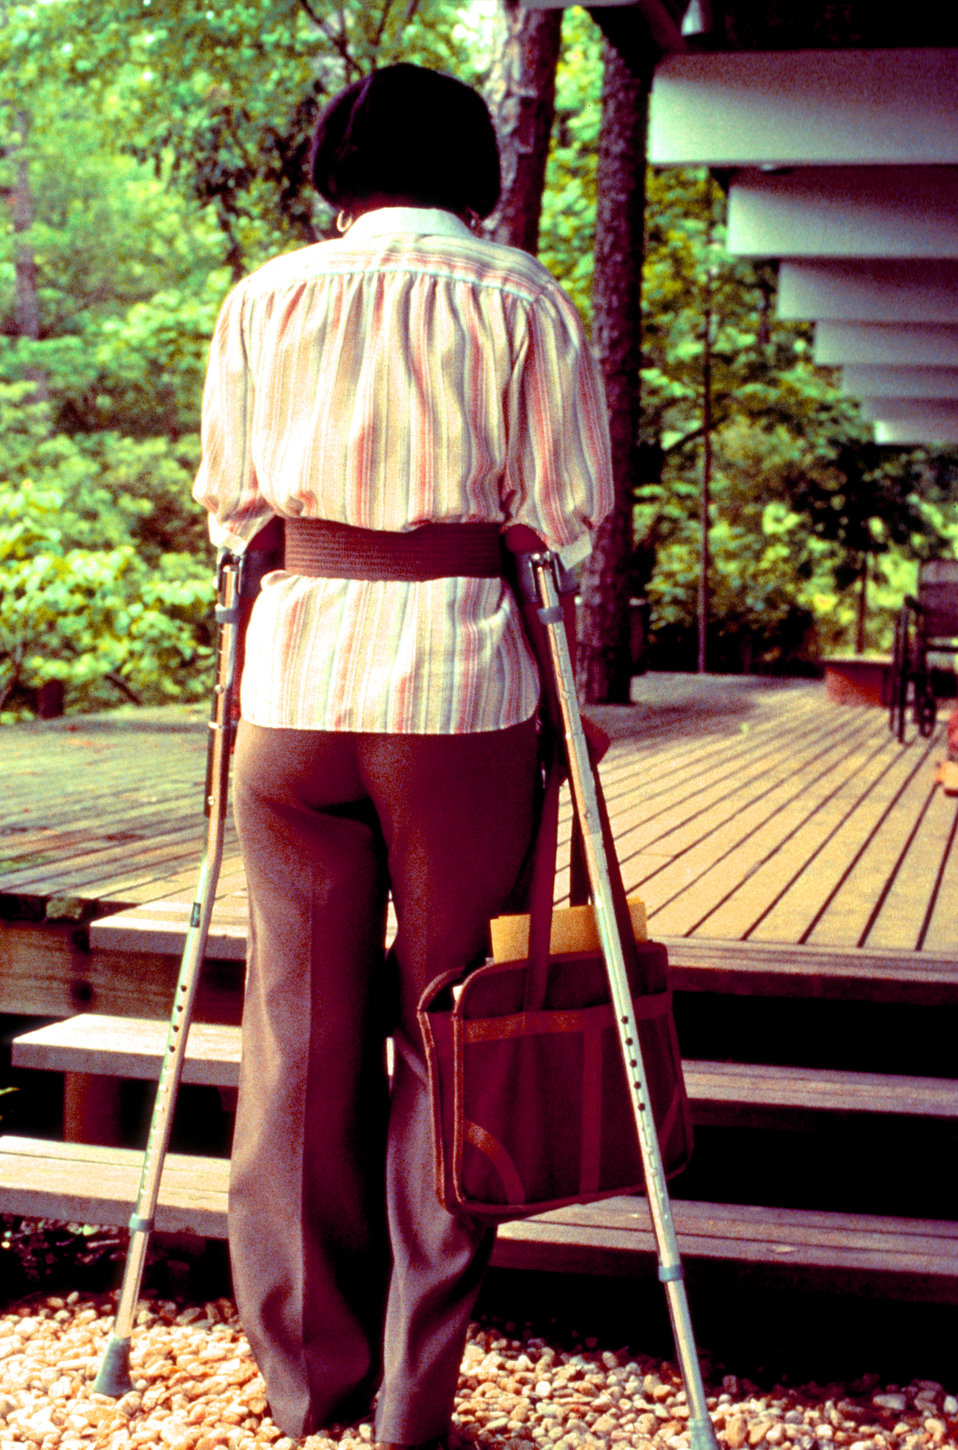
In an attempt to ascend to the next level of a wooden deck, this woman, who at the time was in need of crutches, was about to attempt her ascent with crutches by proceeding a climb up some steps with no accompanying handrail. Without handrails, her ascent becomes very difficult, and very dangerous. Even in those areas that are not heavily trafficked, taking into account those who may be amongst the user group who could be mobility-impaired, would increase the overall usability, and safety levels for all who might use these facilities.